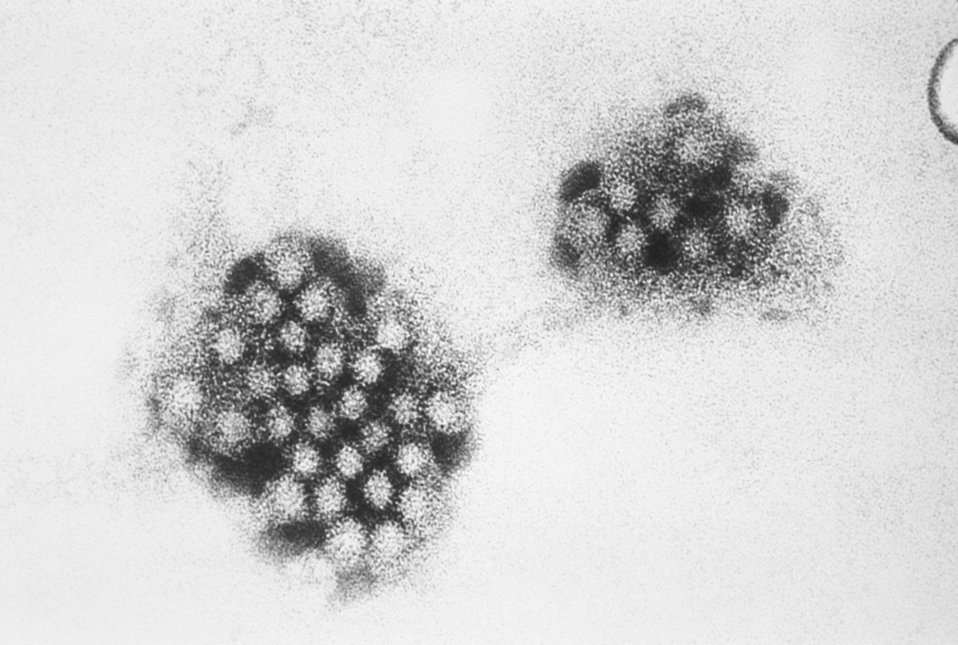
An electron micrograph of the Norovirus, with 27-32nm-sized viral particles.